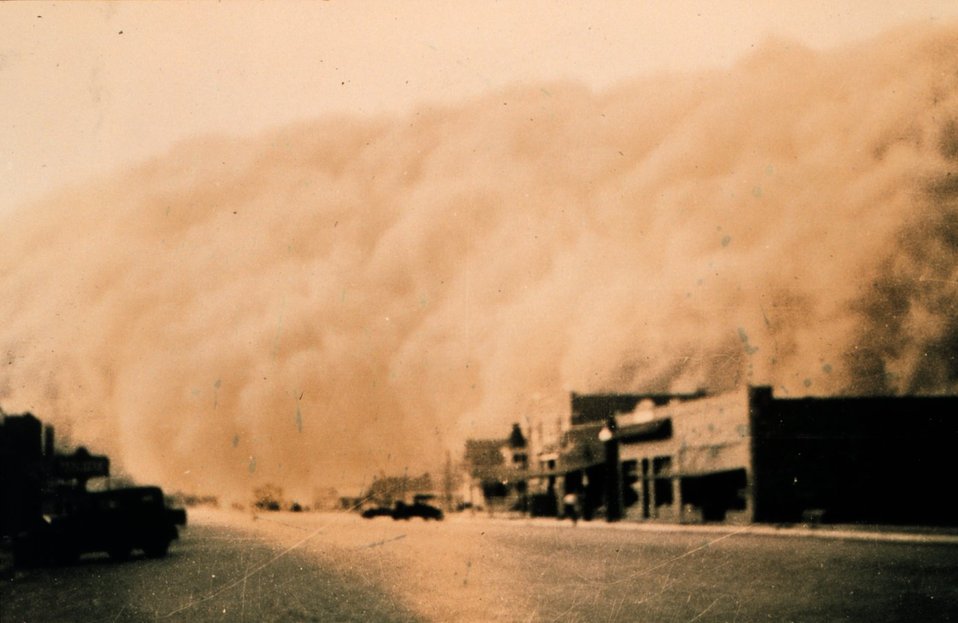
Dust storm approaching Stratford, Texas. Dust bowl surveying in Texas